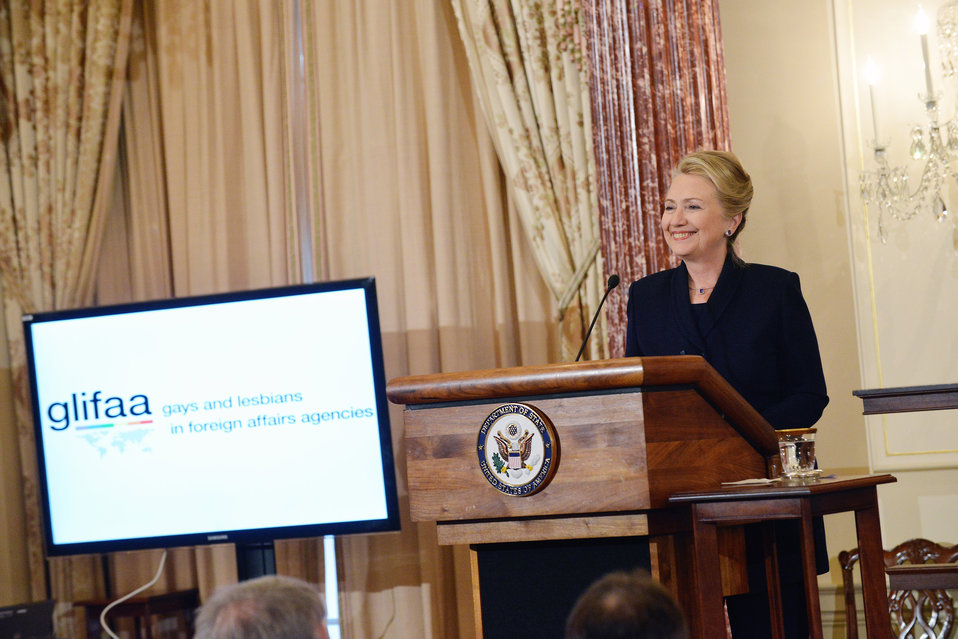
Secretary Clinton Delivers Remarks at the GLIFAA 20th Anniversary Celebration

U.S. Secretary of State Hillary Rodham Clinton delivers remarks at the Gays and Lesbians in Foreign Affairs (GLIFAA) 20th Anniversary celebration at the U.S. Department of State in Washington, D.C., November 28, 2012.